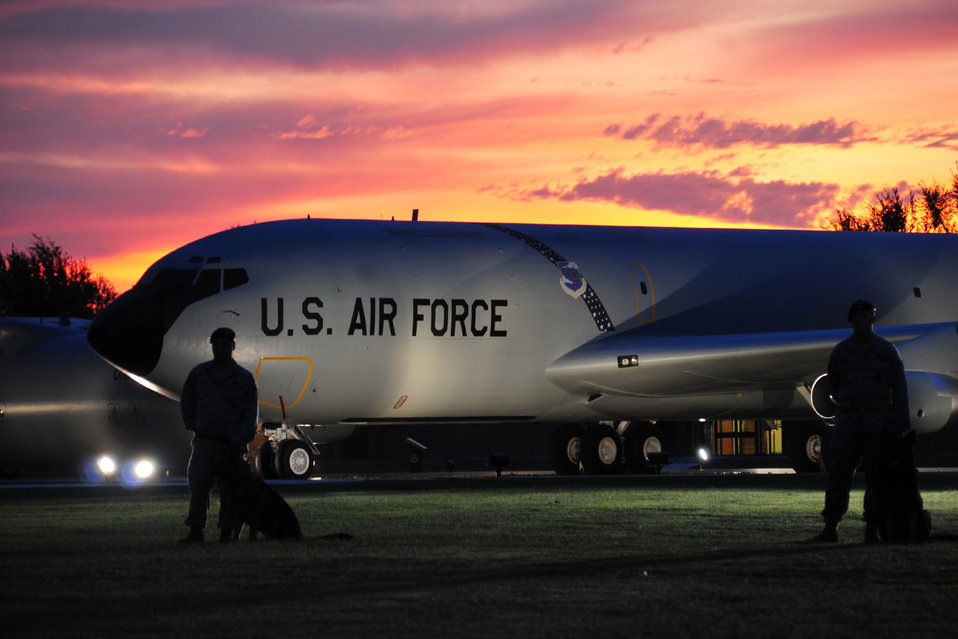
Base remembers missing military

Security Forces members with the 97th Air Mobility Wing stand with their military working dogs during a Prisoners of War/Missing in Action ceremony Sept. 17, 2010, at Altus Air Force Base, Okla. The sunrise POW/MIA ceremony is held annually to remember those who have sacrificed their lives for their country and to usher in the start of a new dawn, new hope.